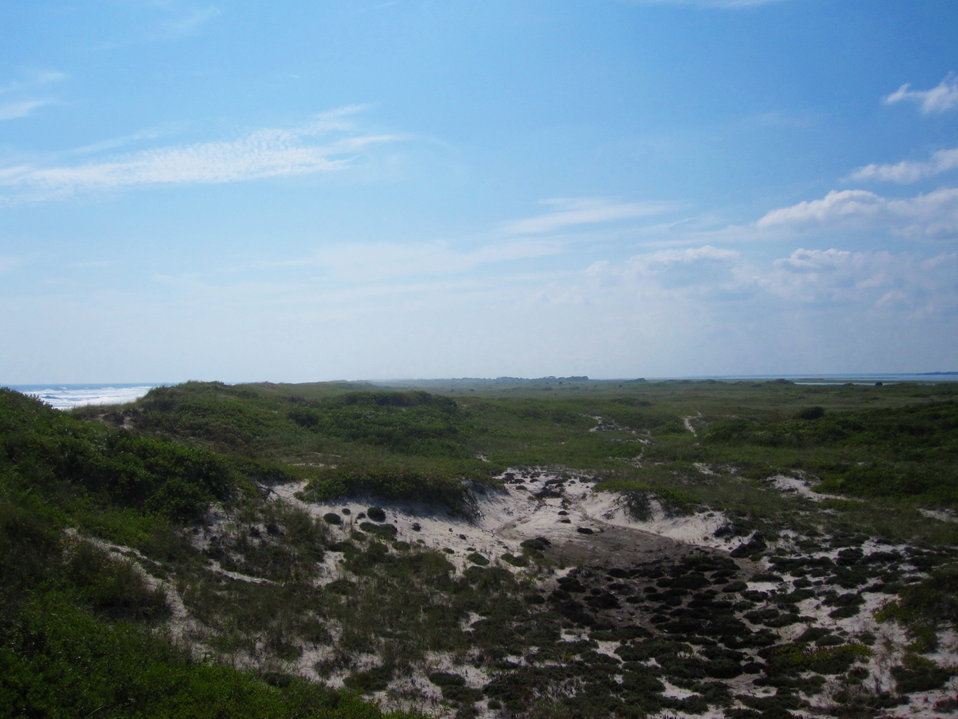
L I Shore2Shore ... By... Stevan